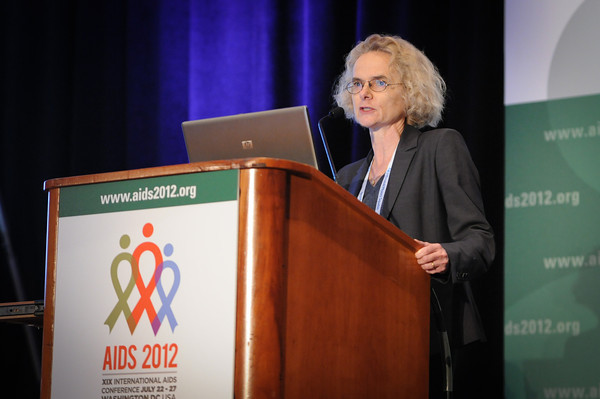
Dr. Volkow Speaks at XIX International AIDS Conference 2012 - 1